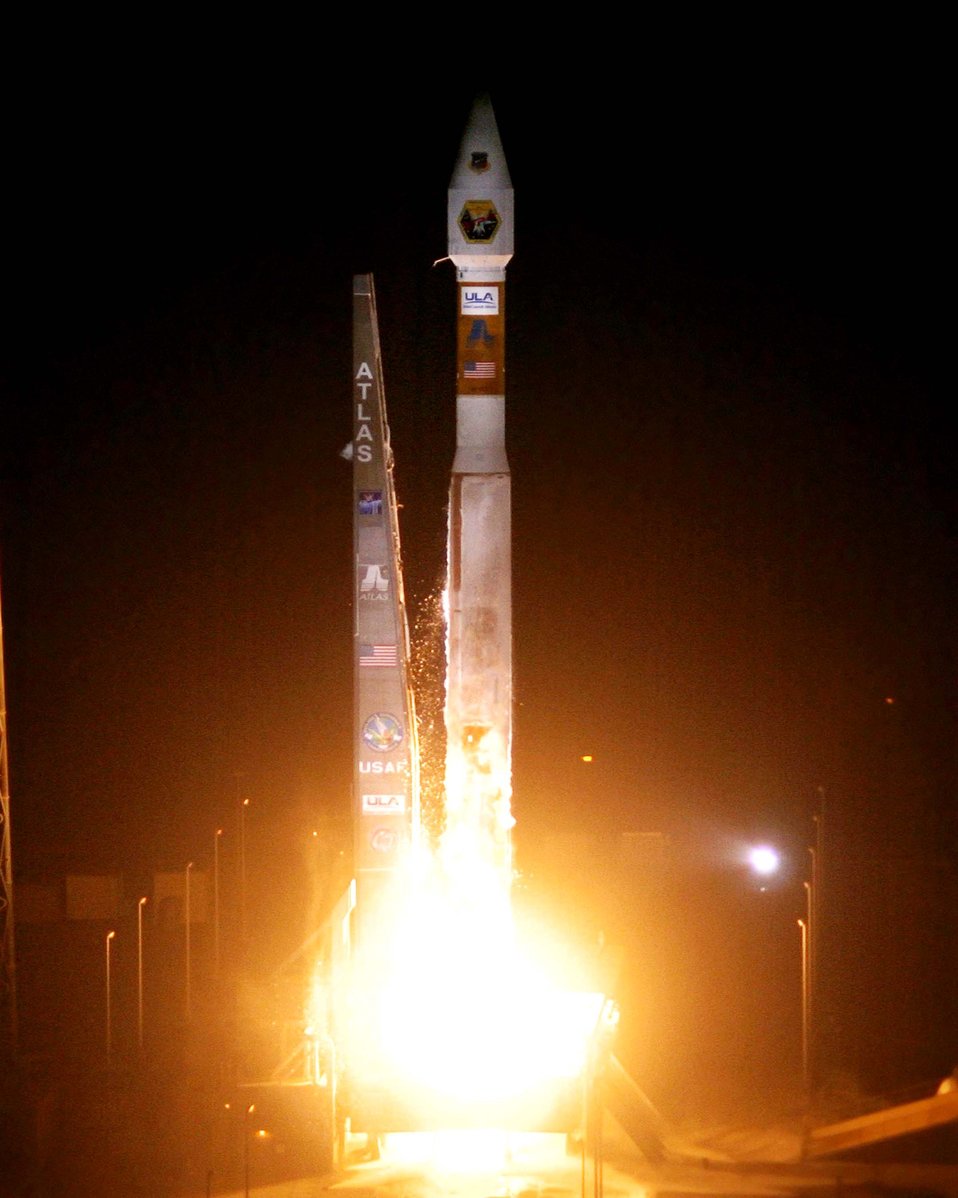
Air Force launches multiple satellites on Atlas V rocket

Six satellites were launched into orbit on board a single Atlas V Evolved Expendable Launch Vehicle March 8. This marks the 50th consecutive successful launch by the Air Force since May 1999.